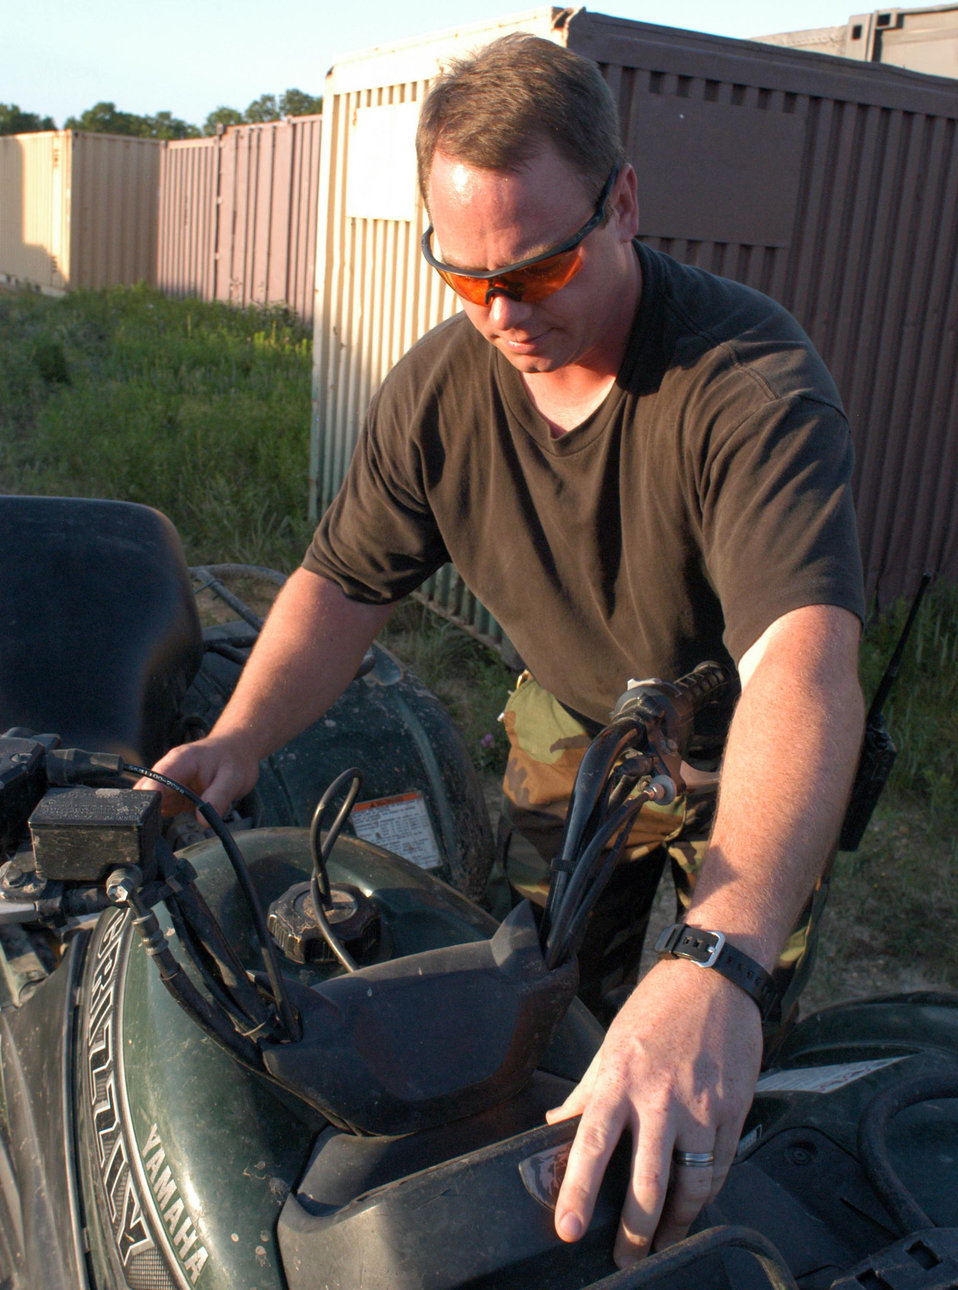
Range keepers help pilots stay combat ready

Master Sgt. Tracey Sargent fixes the idle on a four-wheeler June 19 at Cannon Range near Fort Leonard Wood, Mo. Sergeant Sargent, a mechanic with the Missouri Air National Guard, is one of 11 people who manage and operate the range. The Airmen there represent nine different career fields and have to be proficient in a mulititude of skills to keep the range open for business training Air Force Reserve, Guard and active-duty pilots in attacking ground targets.